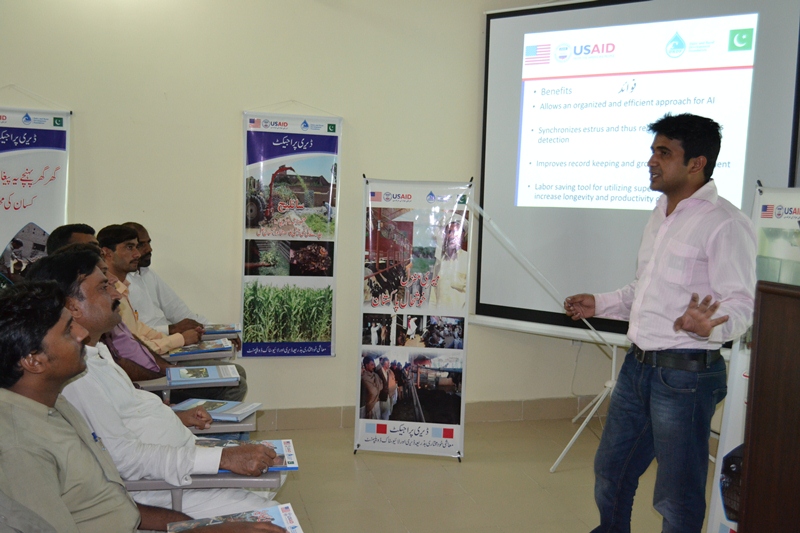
1 - First batch of Dairy Project farm manager trainees attending Farm Managers Training by USAId Dairy Project